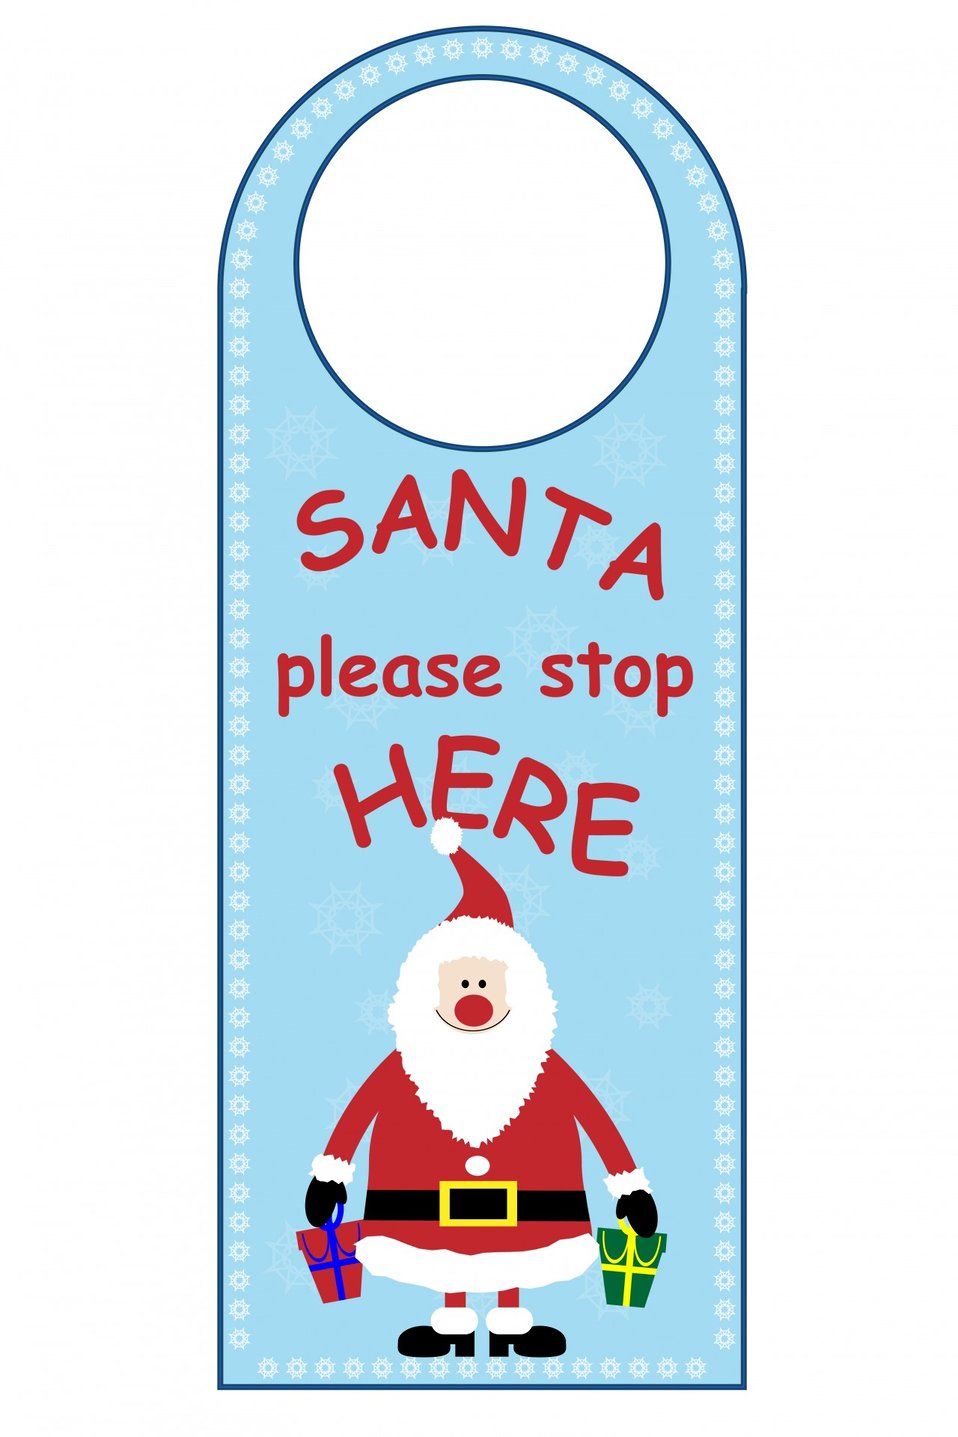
Christmas door hanger santa

Cute santa please stop here door hanger for kids, children to print and cutout.